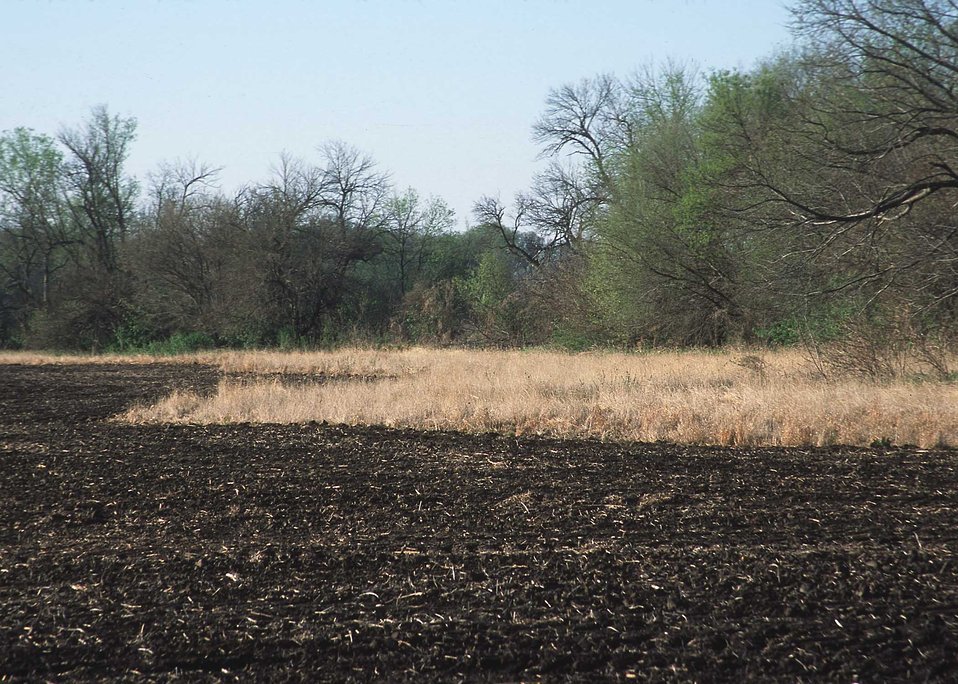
Conservation buffers seeded to Prairie grasses border riparian habitat and a cultivated field. Kansas.